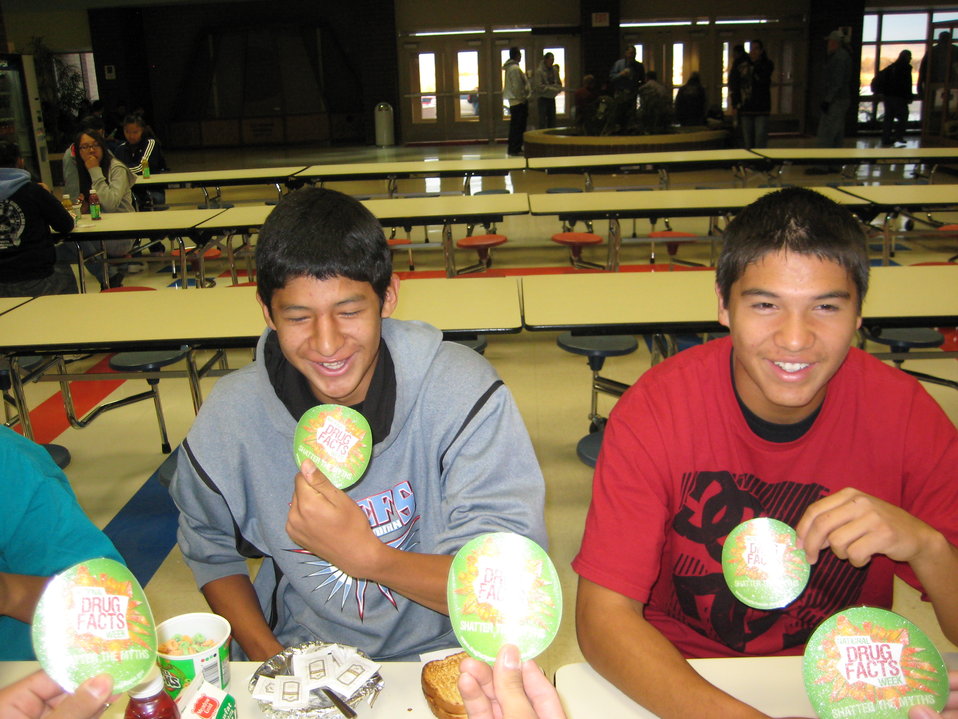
Wyoming Indian High School students sport the official Shatter the Myth stickers.